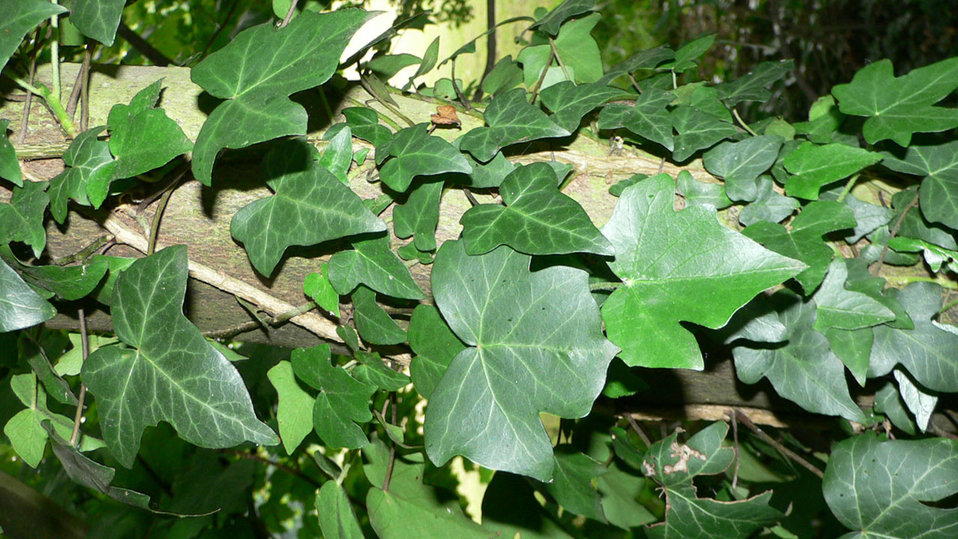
Ivy on a log.